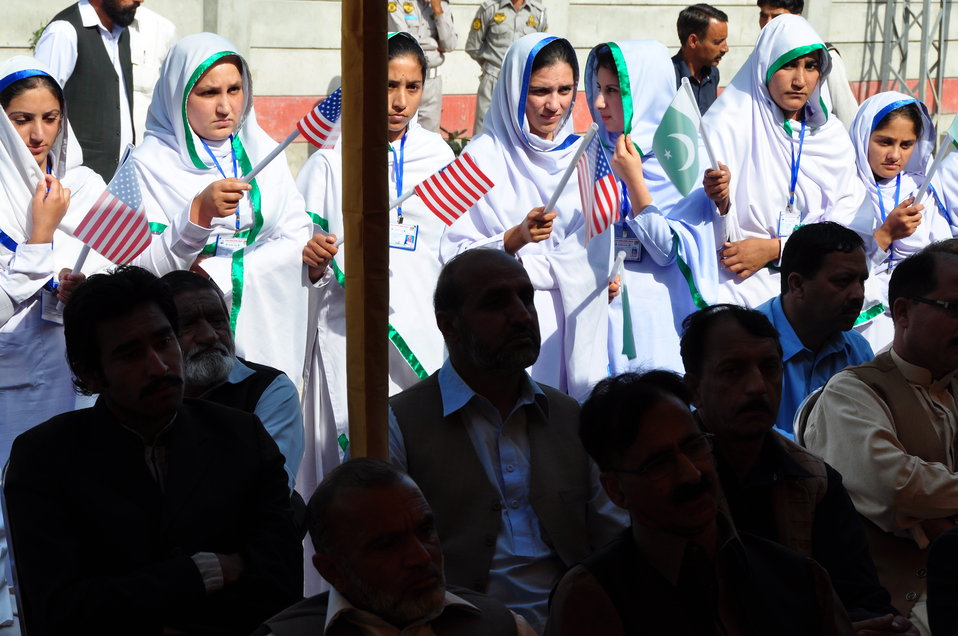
Dhirkot Reconstructed Hospital Inauguration Pakistan Reconstruction Program 12